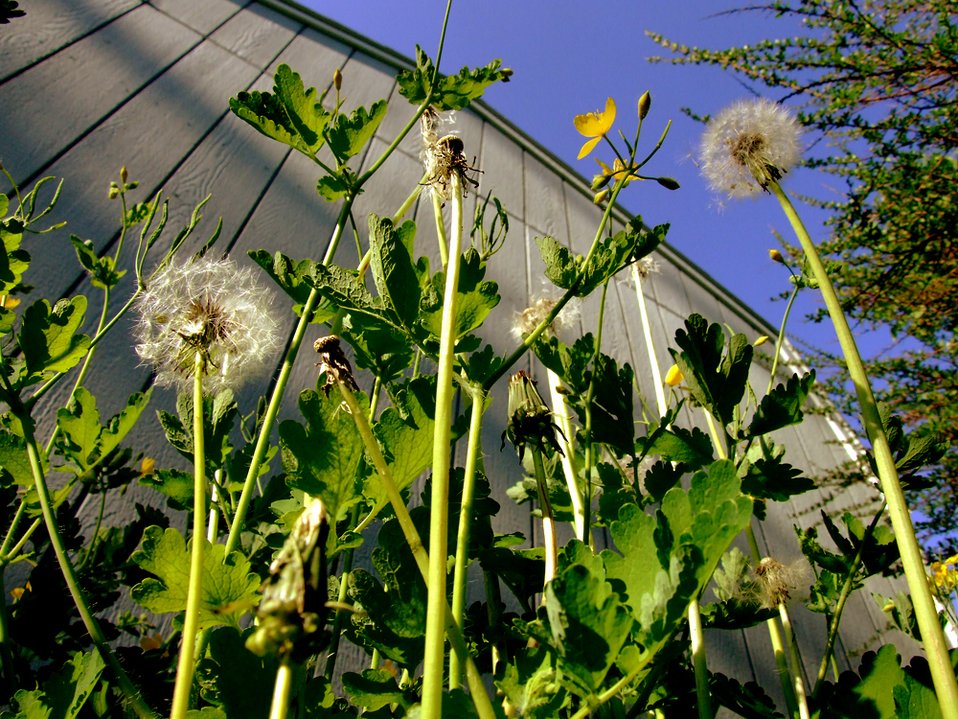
Dandelion clocks beside my neighbors house. This picture was taken by me.